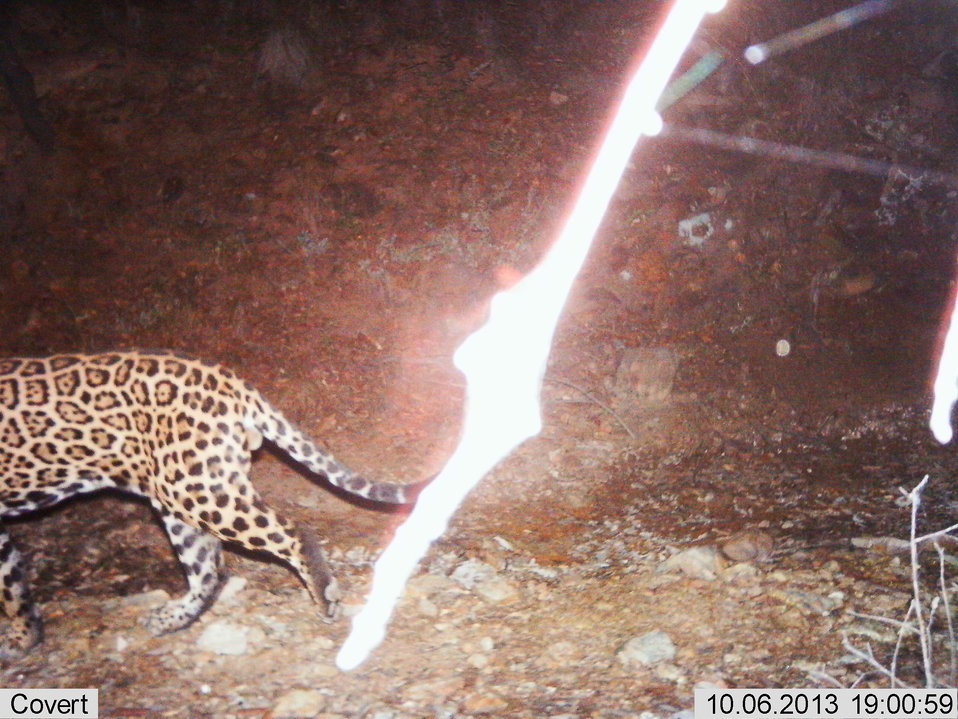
Male jaguar photographed by automatic wildlife cameras in the Santa Rita Mountains on Oct 6, 2013, as part of a U.S. Fish and Wildlife Service/Department of Homeland Security-funded jaguar survey conducted by University of Arizona. The jaguar has been photographed previously at this location.